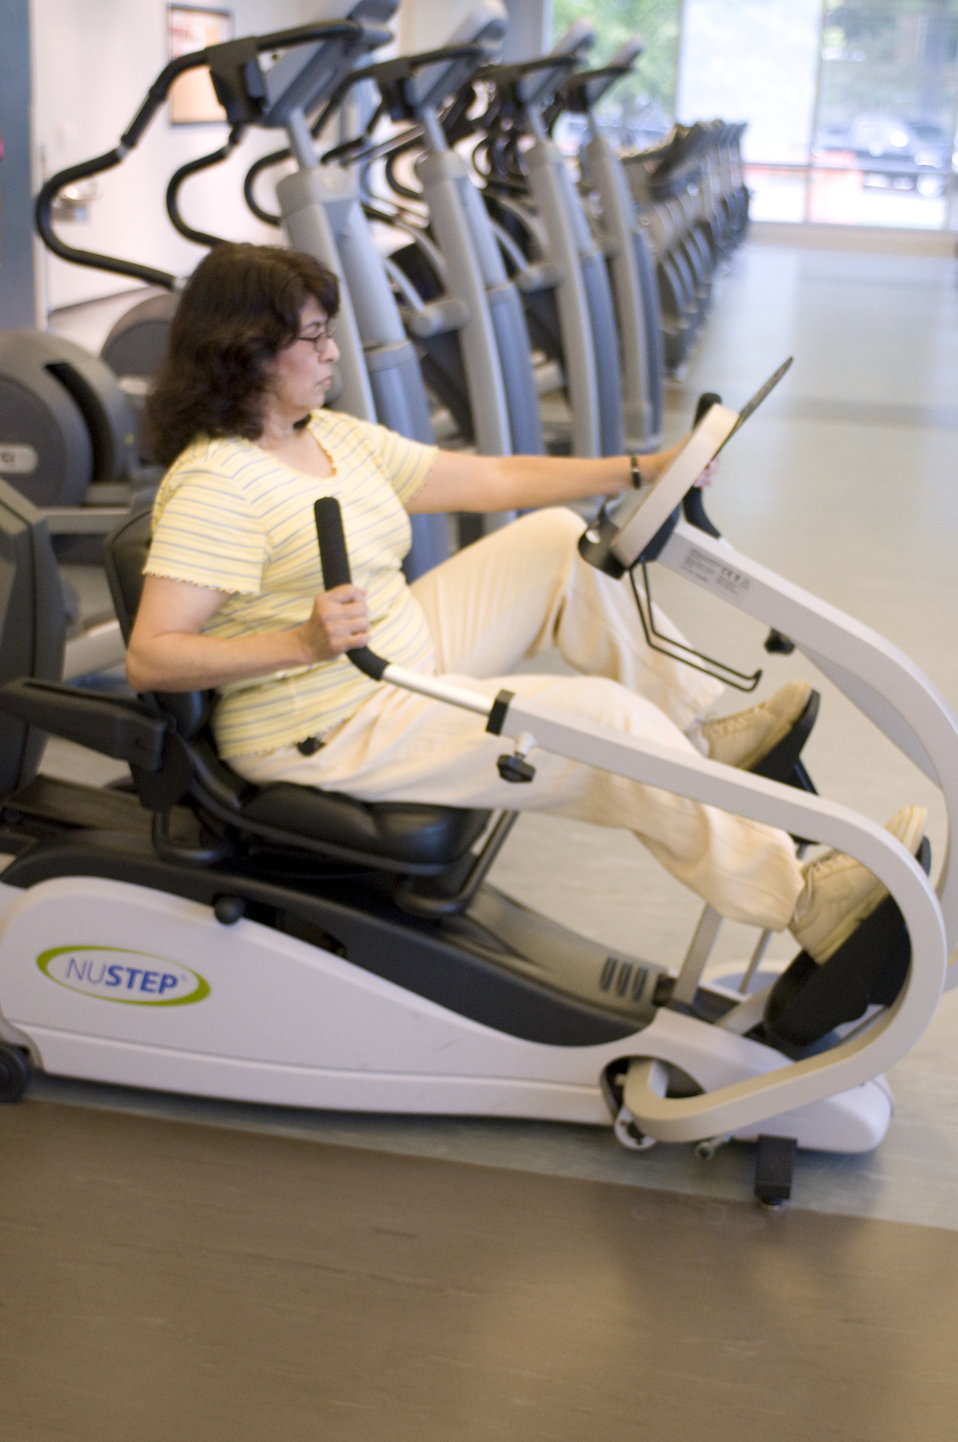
This image was captured on one of the Centers for Disease Control's (CDC) campuses, in the facility's fitness center, where a number of scheduled group classes are provided for employees' health and enjoyment. In this particular view, a female CDC staffer was making use of a NuStep machine, which in a seated position, works both the upper body, and the lower body in a simultaneous aerobic fashion.